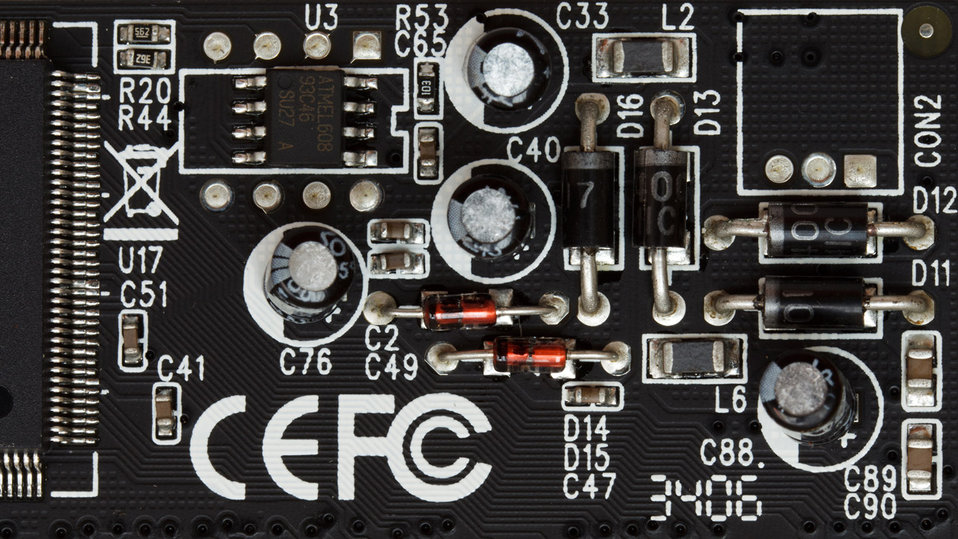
Integrated circuit

Macro photo of an electronic circuit.